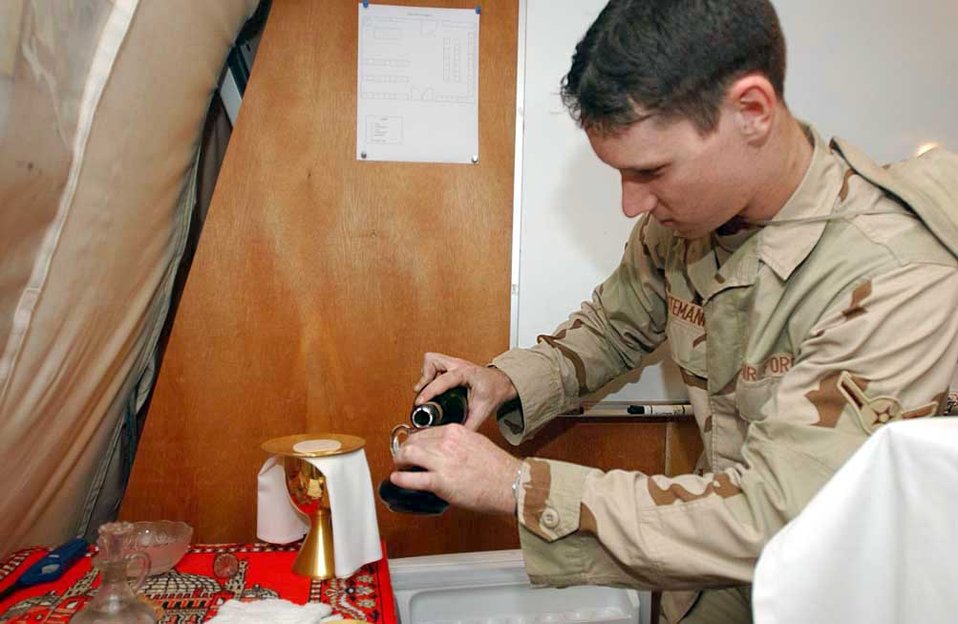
Assisting the chaplain

SOUTHWEST ASIA -- Airman Kevin Intemann, a chaplain assistant, prepares for a communion service. Chaplain assistants take care of office functions and the logistical needs of the chapel, so chaplains can concentrate on people in a deployed environment. Airman Intemann is assigned to the 379th Air Expeditionary Wing.